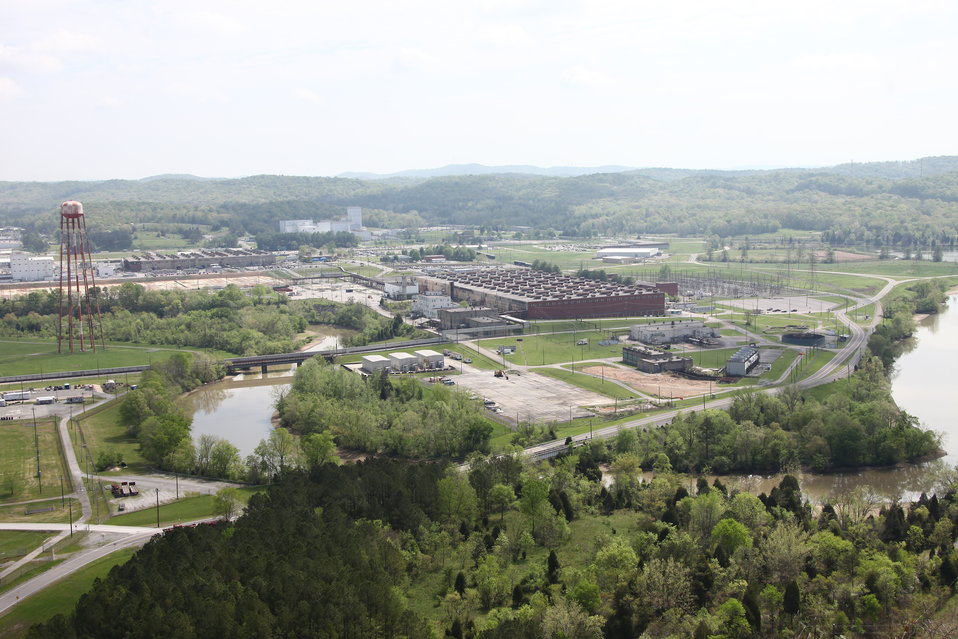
ETTP